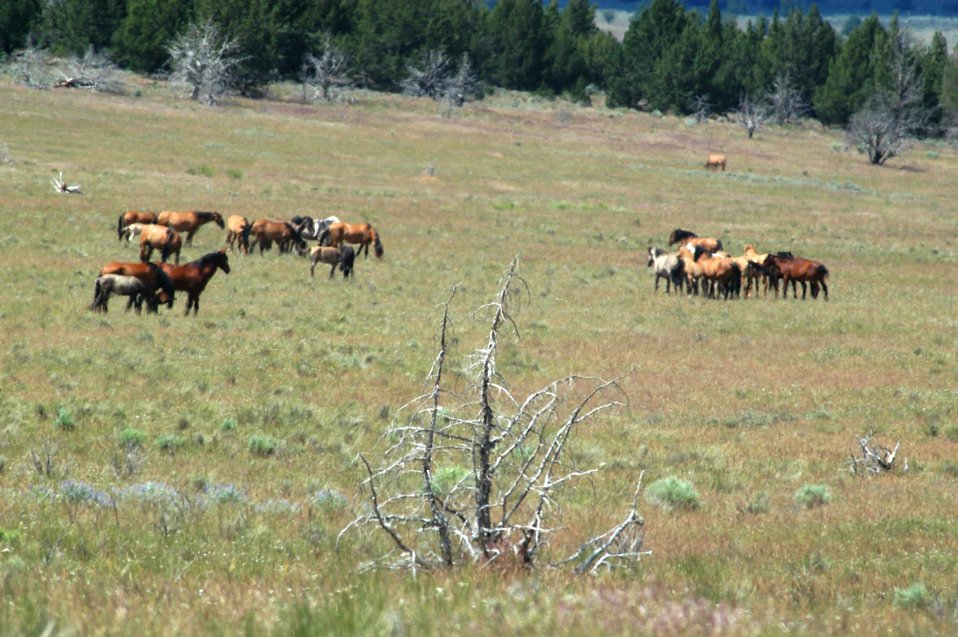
Kiger horses roam the plateaus of the Kiger Wildhorse Herd Management Area near Steens Mountain in Southeastern Oregon.